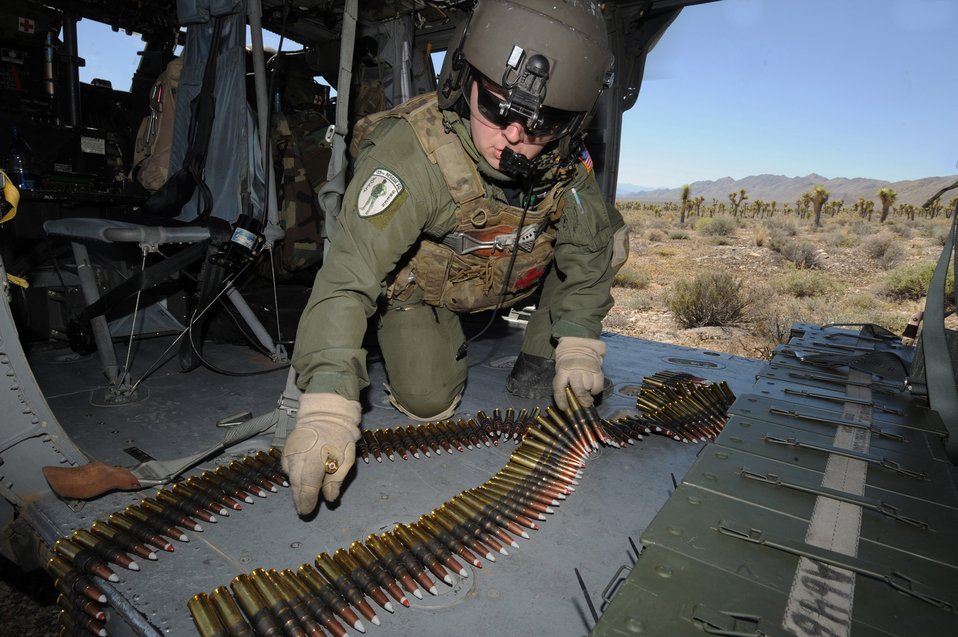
California Guard participates in firing mission

Staff Sgt. Andrew Gibson checks the ammo belt for a .50-caliber machine gun on board an HH-60G Pave Hawk during a firing mission June 25, 2010, on the Nevada Test and Training Range. Sergeant Gibson is a flight engineer assigned to the California Air National Guard's 129th Rescue Squadron at Moffett Field, Calif.